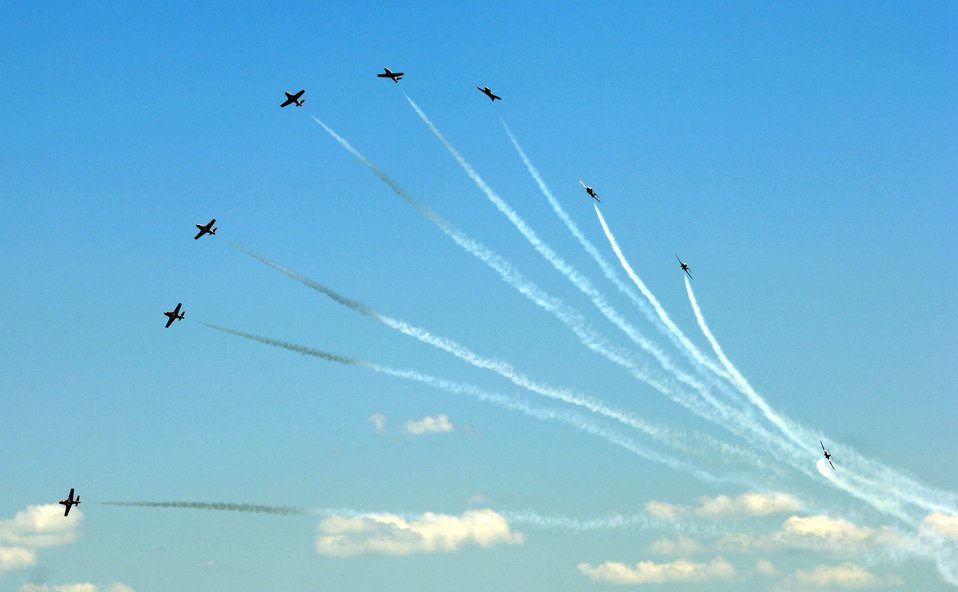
2006 Joint Service Open House

The Canadian Air Force's 431st Air Demonstration Squadron performs during the 56th annual Department of Defense 2006 Joint Service Open House at Andrews Air Force Base, Md., on Saturday, May 20, 2006. The three-day event highlighted American aviators, aircraft and technology.